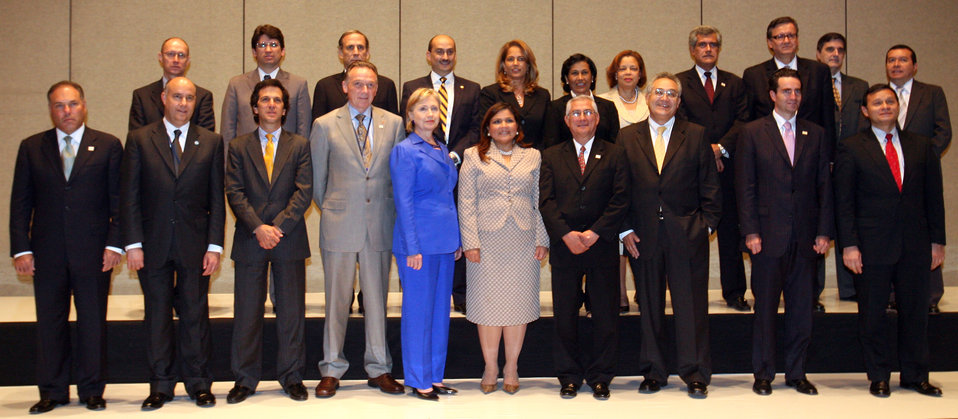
Secretary Clinton With Pathways to Prosperity in the Americas Participants

U.S. Secretary of State Hillary Rodham Clinton poses with Ministers of Foreign Affairs and Trade from Canada, Chile, Colombia, Costa Rica, El Salvador, the United States, Guatemala, Honduras, Mexico, Nicaragua, Panama, Peru and the Dominican Republic. Secretary Clinton and the Ministers participated in the second Pathways to Prosperity in the Americas ministerial meeting in San Salvador, El Salvador May 31, 2009.